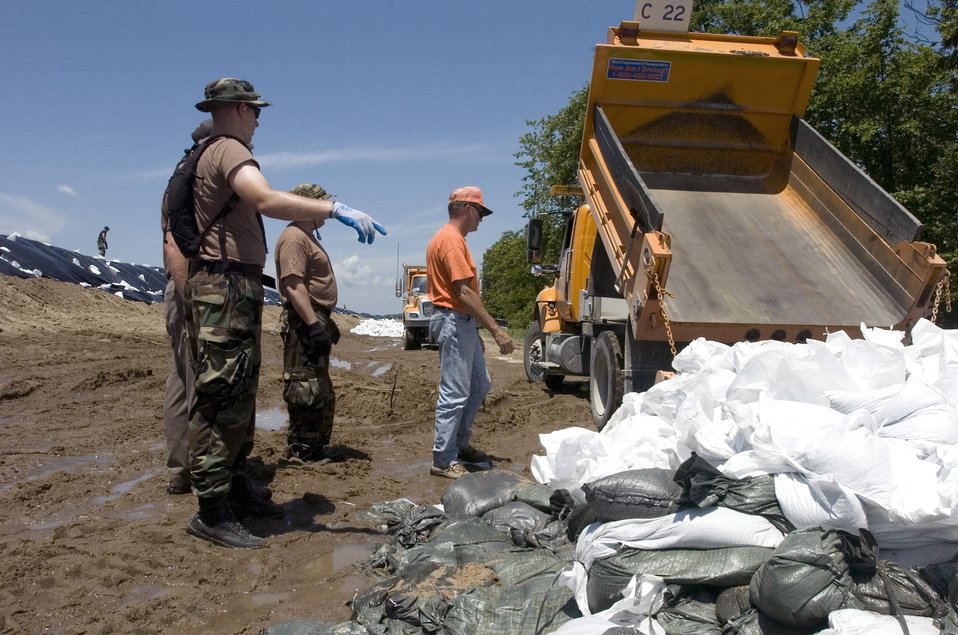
Illinois Air National Guard provides help

A truck full of sand bags is unloaded June 19 to help prevent erosion along the Sny levee near Pleasant Hill, Ill. The Sny levee protects communities along the Mississippi River for 52-miles. Air National Guardsman from around the state have been deployed to help reinforce the levee.